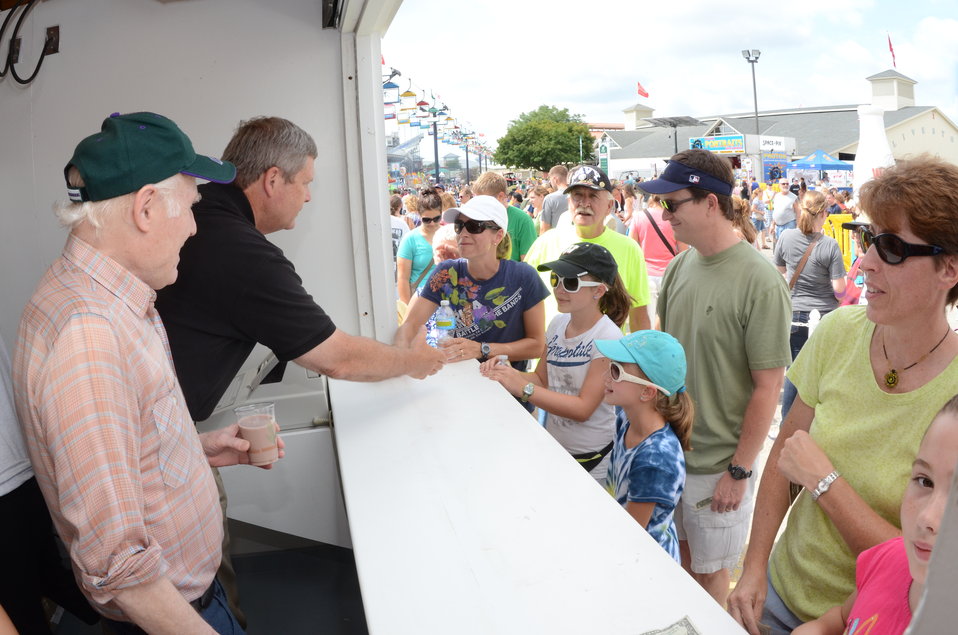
Wisconsin Senator Herb Kohl (left) and Agriculture Secretary Tom Vilsack at the Wisconsin State Fair, in West Allis, WI, on Thursday, August 4, 2011, USDA Photo by Lance Cheung.